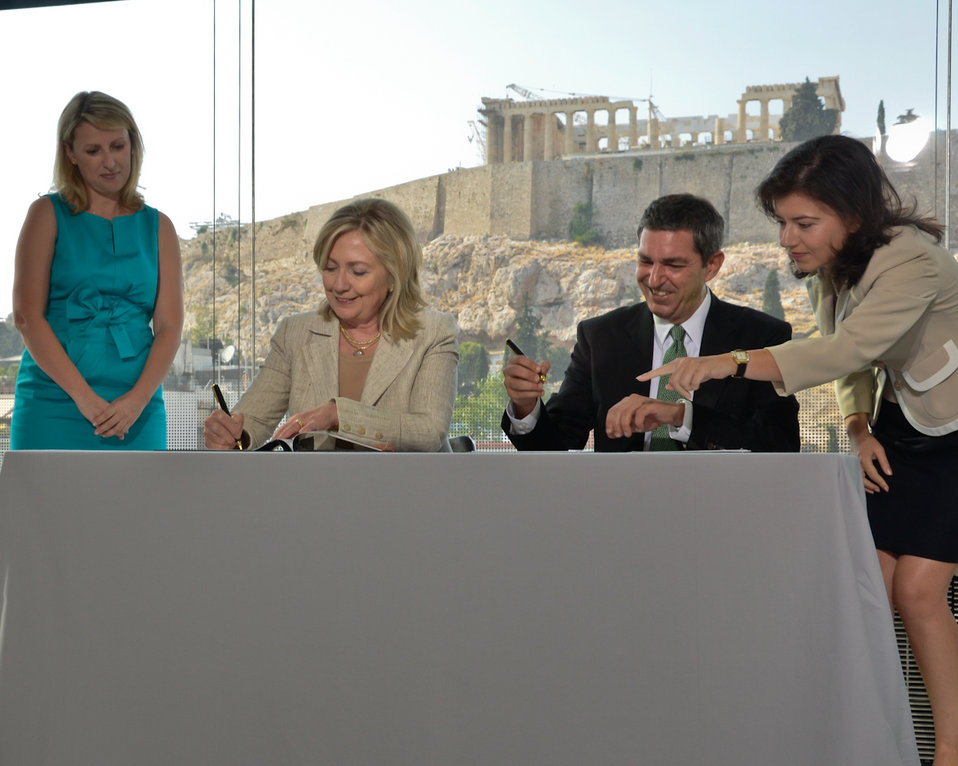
Secretary Clinton and Greek Foreign Minister Lambrinidis Sign an Agreement To Protect Greek Cultural Heritage

U.S. Secretary of State Hillary Rodham Clinton and Greek Foreign Minister Stavros Lambrinidis sign a Memorandum of Understanding between the Government of the United States of America and the Government of the Hellenic Republic to reduce the incentive for further pillage of Greece's cultural heritage at the Acropolis Museum in Athens, Greece, on July 17, 2011.